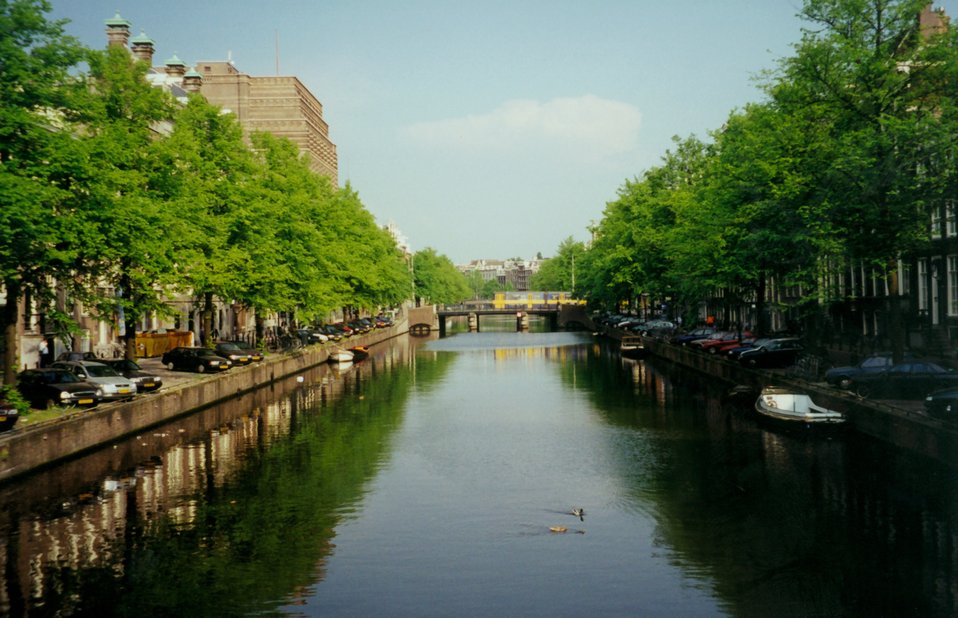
Canals wandering through Amsterdam.